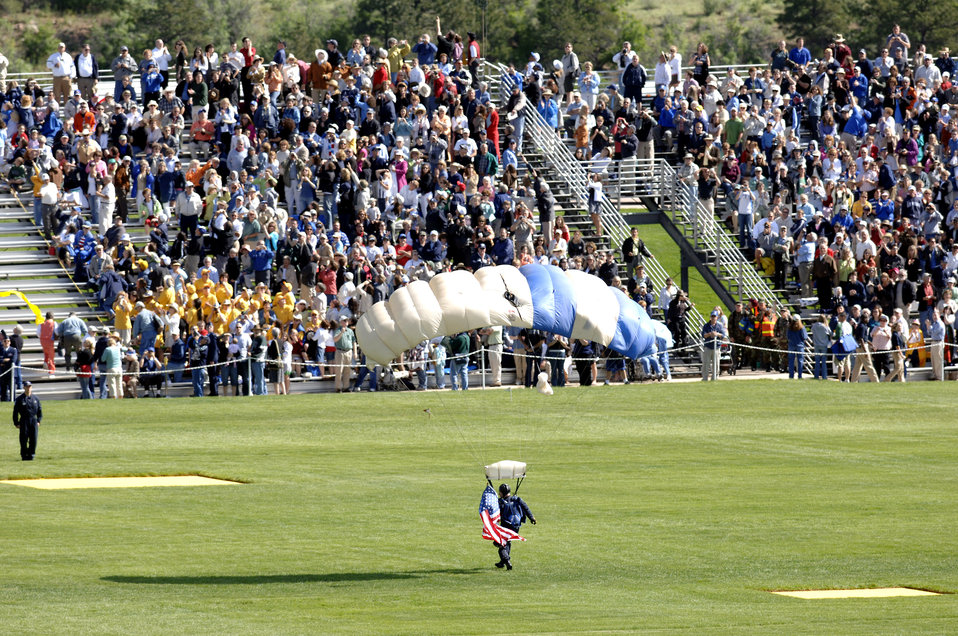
Parade preps Class of 2007 for graduation

A Wings of Blue parachutist arrives on the parade field during the 2007 Graduation Parade May 29 at the U.S. Air Force Academy in Colorado. The graduation for the U.S. Air Force Academy's Class of 2007 will be held at 10 a.m. May 30 at Falcon Stadium. Secretary of Defense Dr. Robert M. Gates will be the guest speaker. Cadets are exposed to a balanced curriculum that provides a general and professional foundation essential to a career Air Force officer.